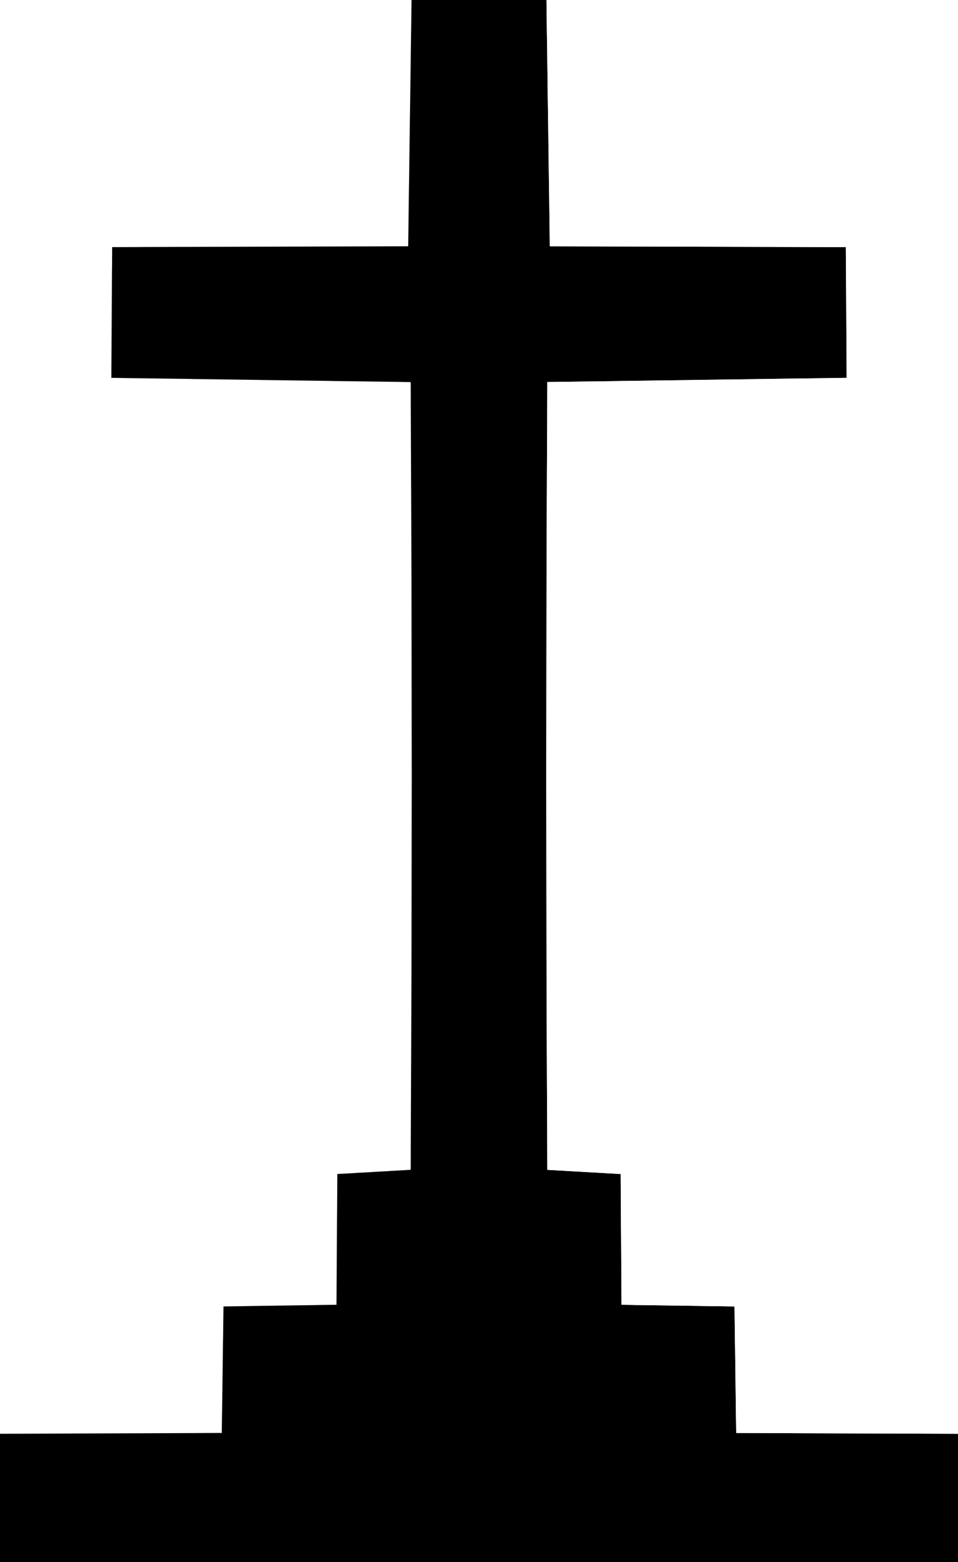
Calvary cross